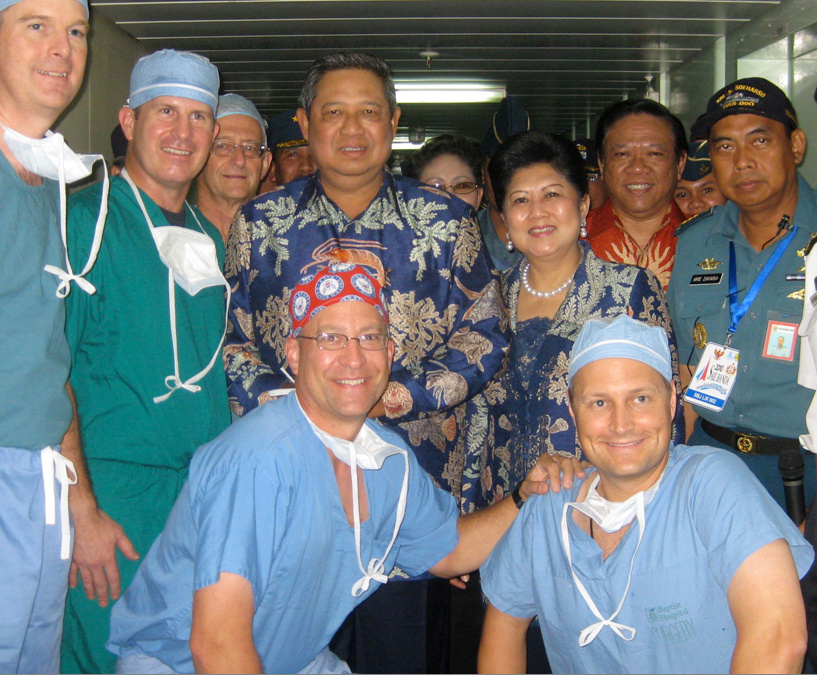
PP2010 Surgical Team Poses for a Photo With Indonesia's President and First Lady

The Pacific Partnership 2010 surgical team poses for a photo with Indonesia's President Yudhoyono and Indonesia's First Lady in August 2010 in Indonesia.